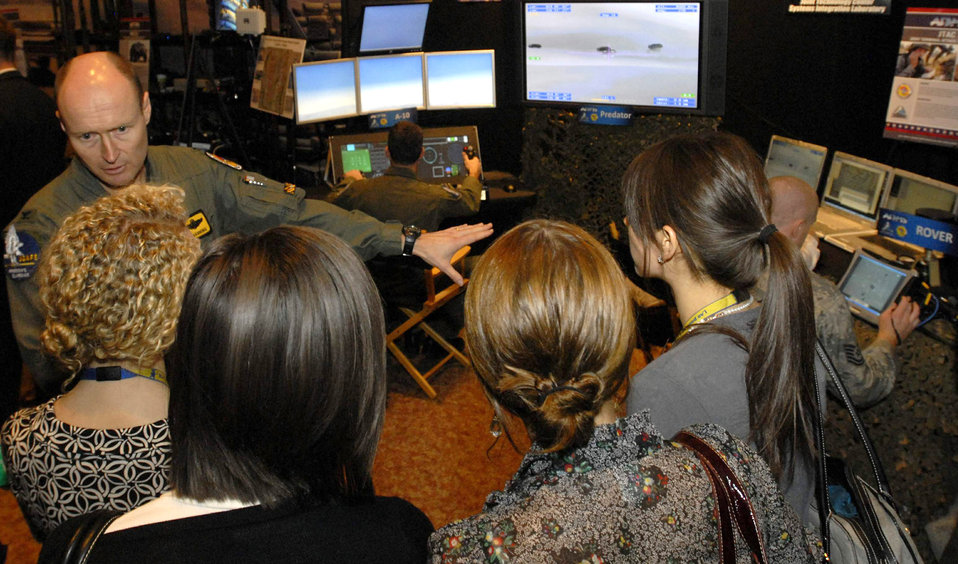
Airmen demonstrate JTAC training, equipment for Congress

Col. Scott Manning explains the joint terminal attack controller mission to Congressional staffers Feb. 3 on Capitol Hill. Colonel Manning, the commander of the Warrior Preparation Center in Einsiedlerhof, Germany, was there demonstrating to Congressmen how Airmen work with joint partners to provide close-air support for troops on the ground.